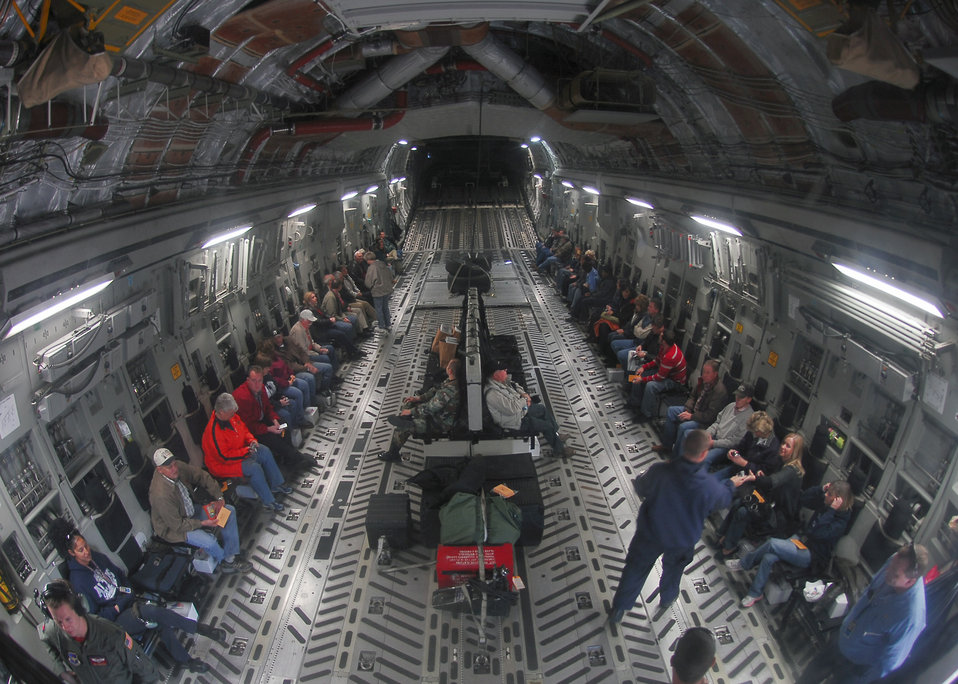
Altus community members spend time in sky

Neighbors of Altus Air Force Base, Okla., prepare for a flight aboard a C-17 Globemaster III Nov. 14. During the flight, passengers were given the chance to see the aircraft being refueled by a KC-135 Stratotanker and observe a pallet drop. The flight was part of the Farm-City community outreach program.